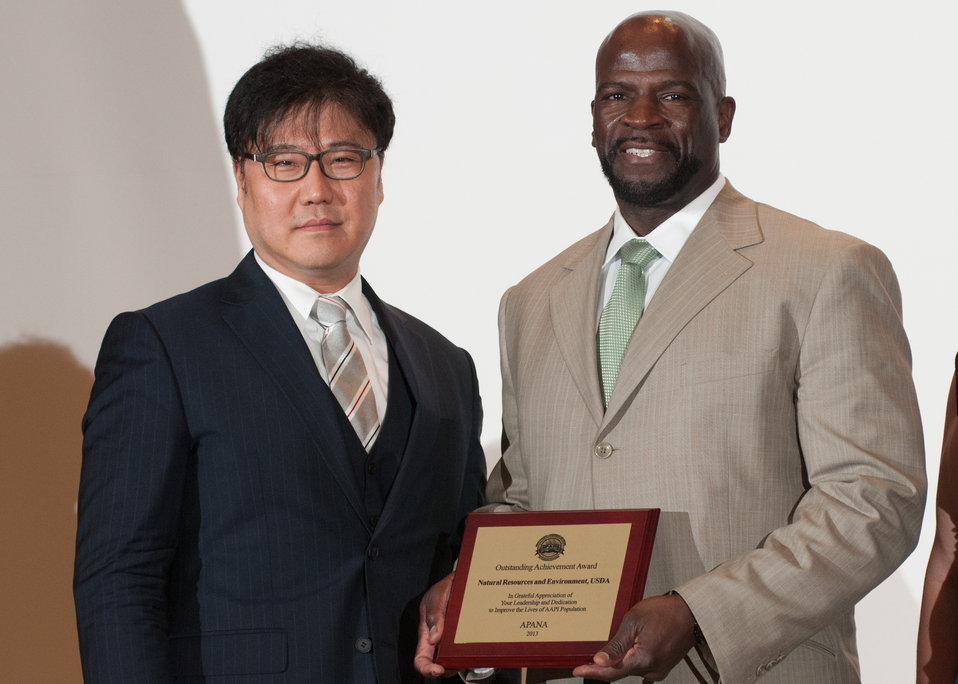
Asian Pacific American Network in Agriculture (APANA) President Justin Rhee, left, presents an “Outstanding Achievement Award” for leadership and dedication to improve the lives of the Asian Americans and Pacific Islander (AAPI) population, to U.S. Department of Agriculture’s (USDA) Acting Deputy Under Secretary (DUS) for Natural Resources and Environment (NRE) Astor Boozer, who is accepting for NRE Acting Undersecretary Ann Mills, during the USDA Asian Pacific American Heritage Month Observance, at the USDA headquarters in Washington, D.C., on Thursday, May 23, 2013. This year’s theme is “Building leadership; Embracing the Cultural Values and Inclusions.”